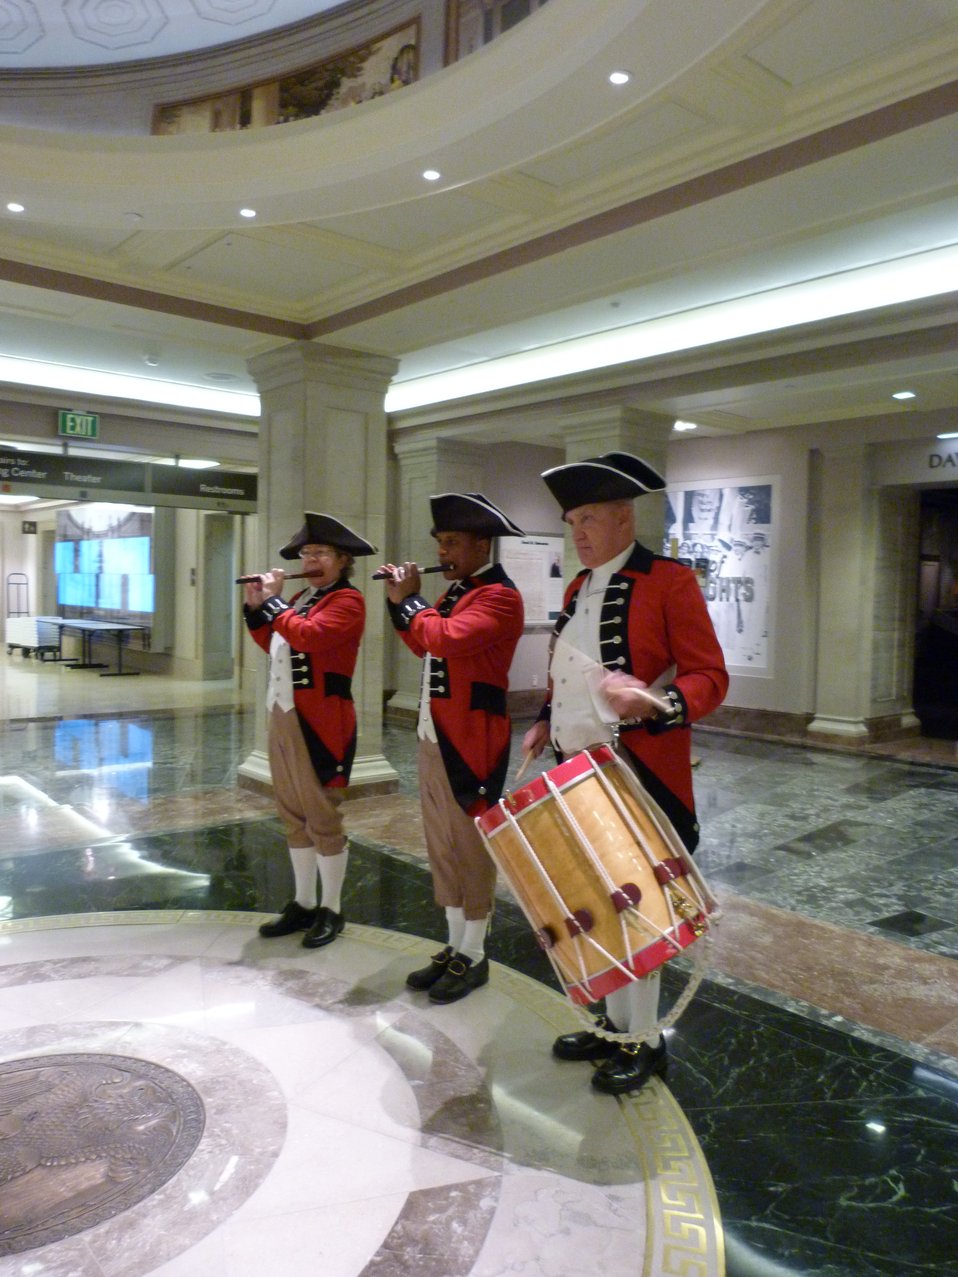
Rotunda Sleepover

Rotunda Sleepoverr; Photo provided by The Foundation for the National Archives